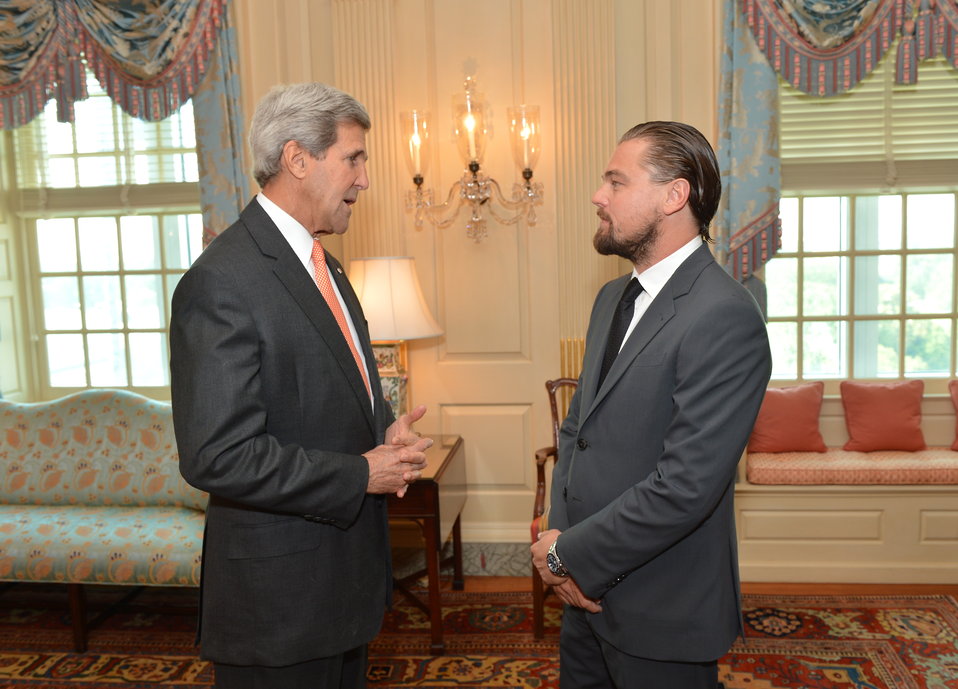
Secretary Kerry Meets With Leonardo DiCaprio

U.S. Secretary of State John Kerry Meets With Leonardo DiCaprio Before the Second Day of the 'Our Ocean' Conference at the U.S. Department of State in Washington, D.C. on June 17, 2014.